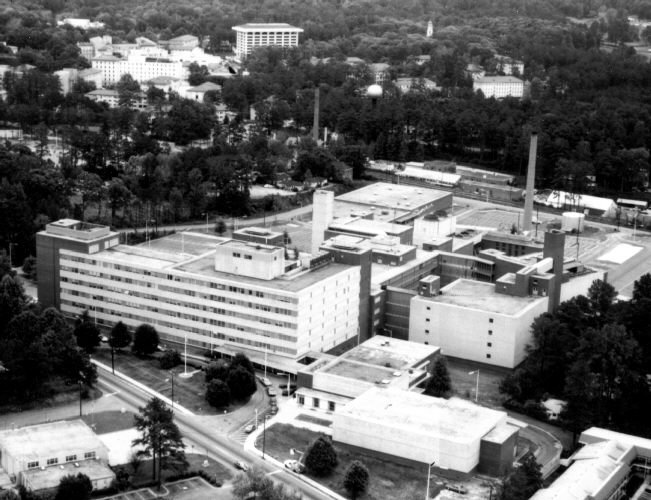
CDC Clifton Road Facility, 1972.